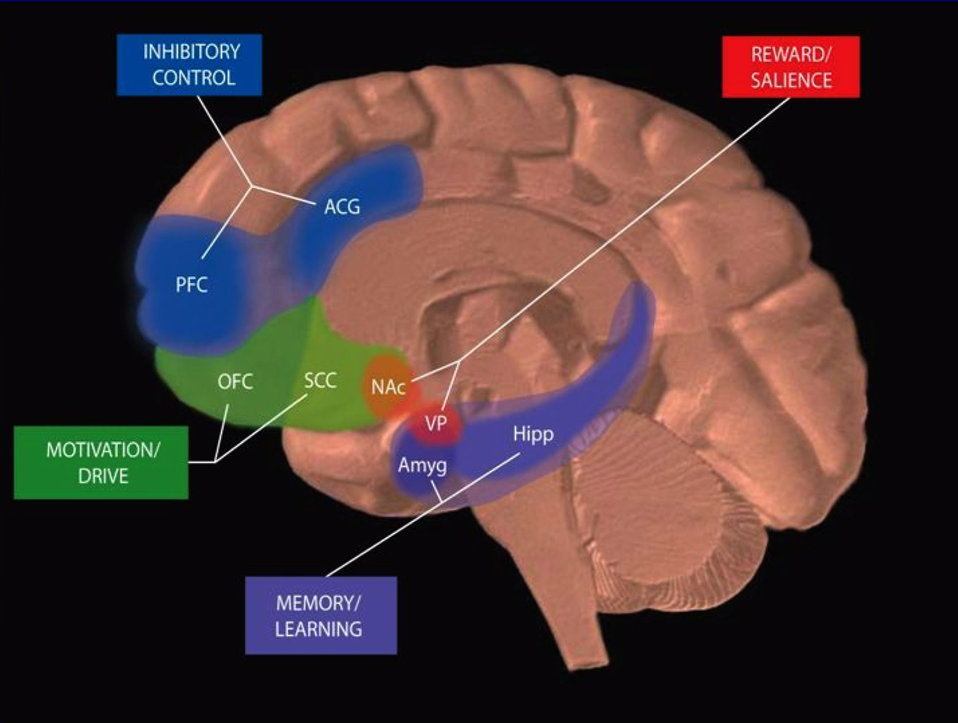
Brain Circuitry

Circuits involved in drug abuse and addiction